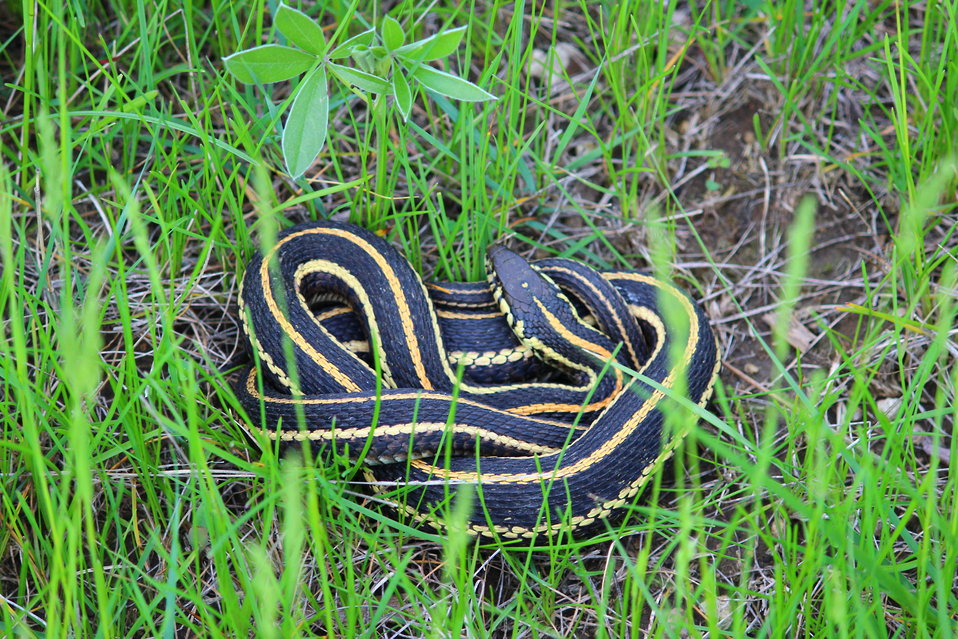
Garter Snake

The Plains garter snake (Thamnophis radix) is a native to the Kulm Wetland Management District. It is a non-venomous snake, usually between one to two feet long, though sometimes longer, that eats frogs, insects, eggs, worms, and small rodents. It is one of the snakes that gives live birth.